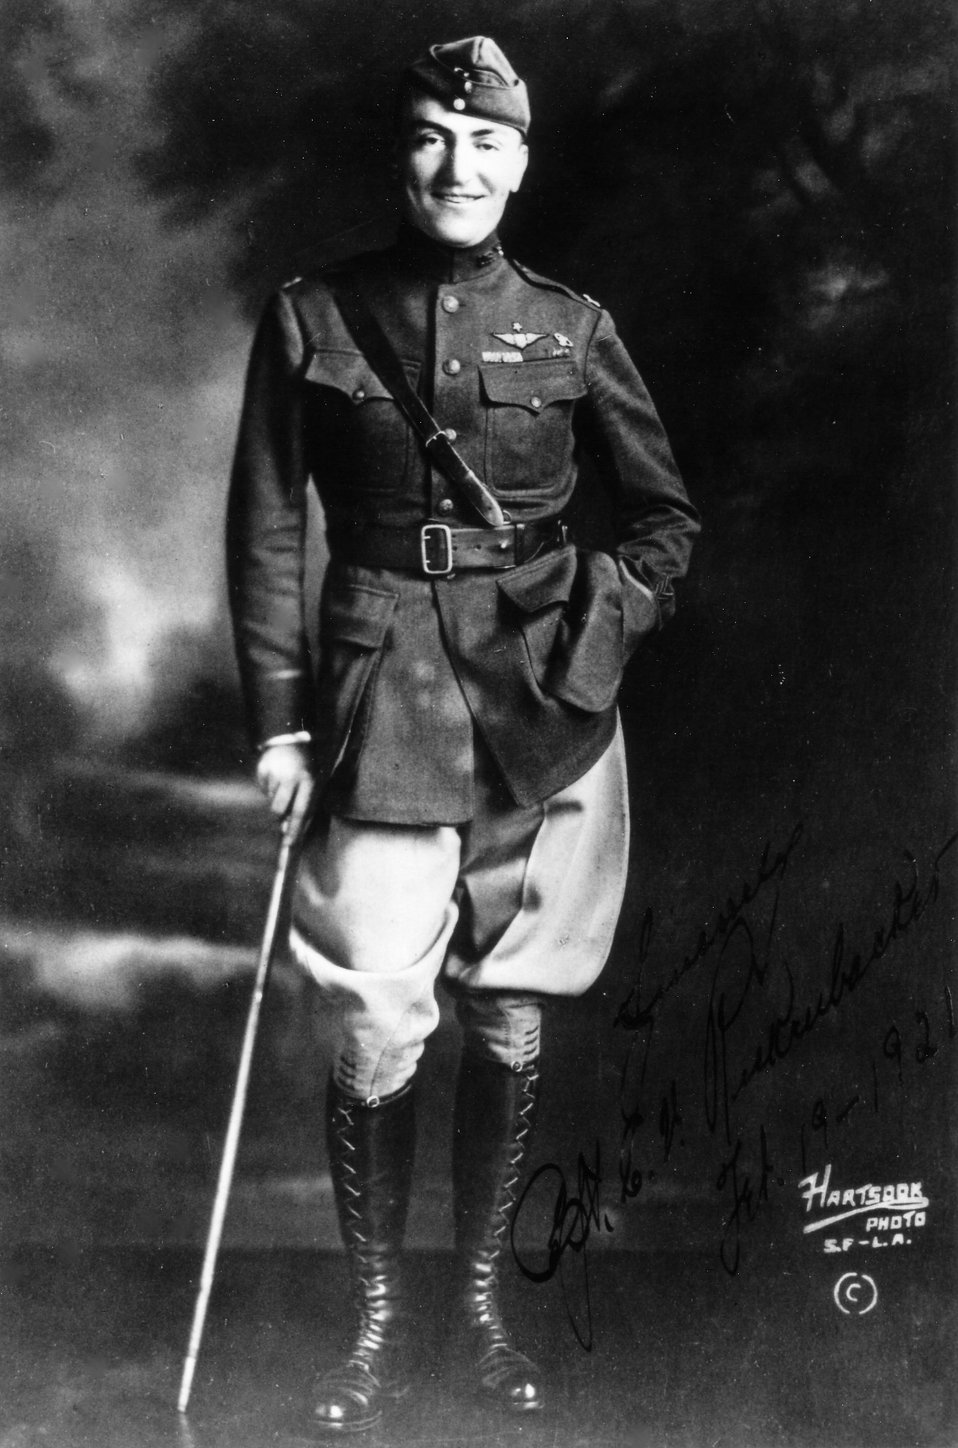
Eddie Rickenbacker

EARLY YEARS -- Edward